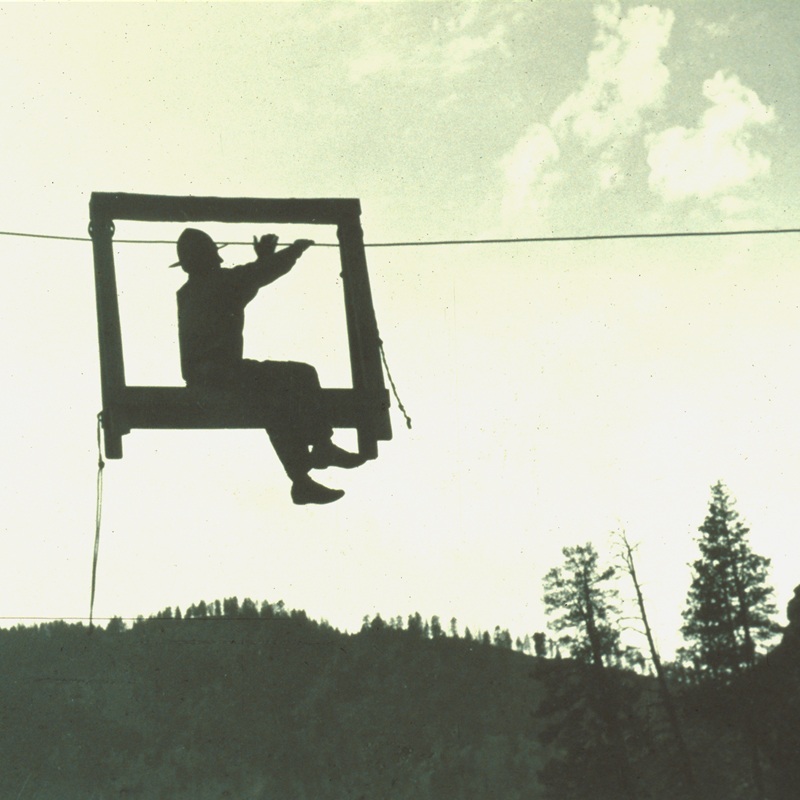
National Geographic Expedition (1935) Lower Salmon River Cottonwood Field Office Upper Columbia Salmon Clearwater District